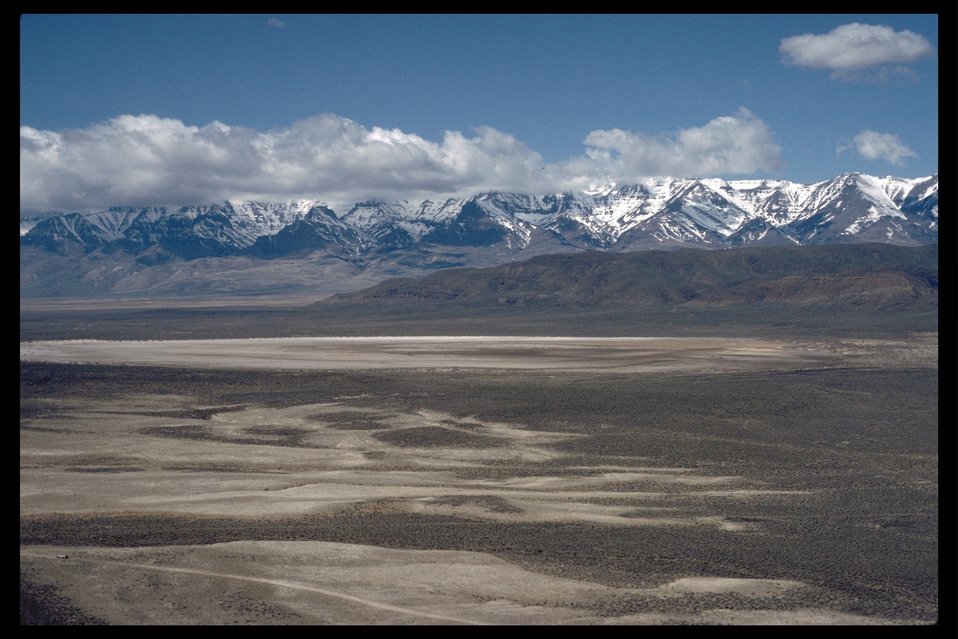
Winter range overlooking east Alvord, flats of the Mickey Basin RNA. (WSA 2-73H)